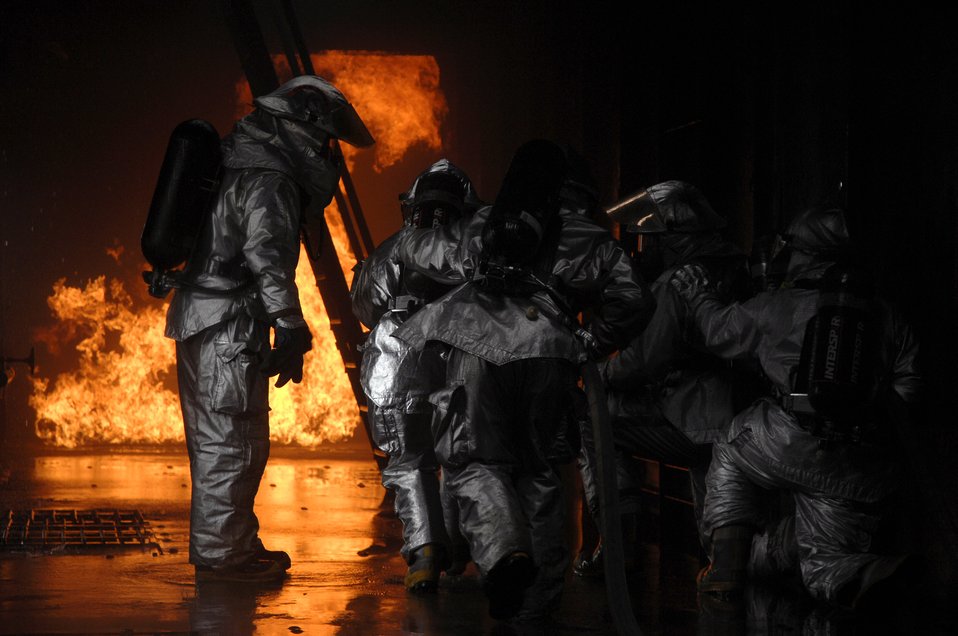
Battling the heat

Master Sgt. Walter Wright (left) instructs firefighters to advance toward the simulated cargo fire March 8 at Royal Air Force Mildenhall, England. Sergeant Wright, a 48th Civil Engineer Squadron firefighter, was the training instructor for all internal fires inside the aircraft fire trainer.